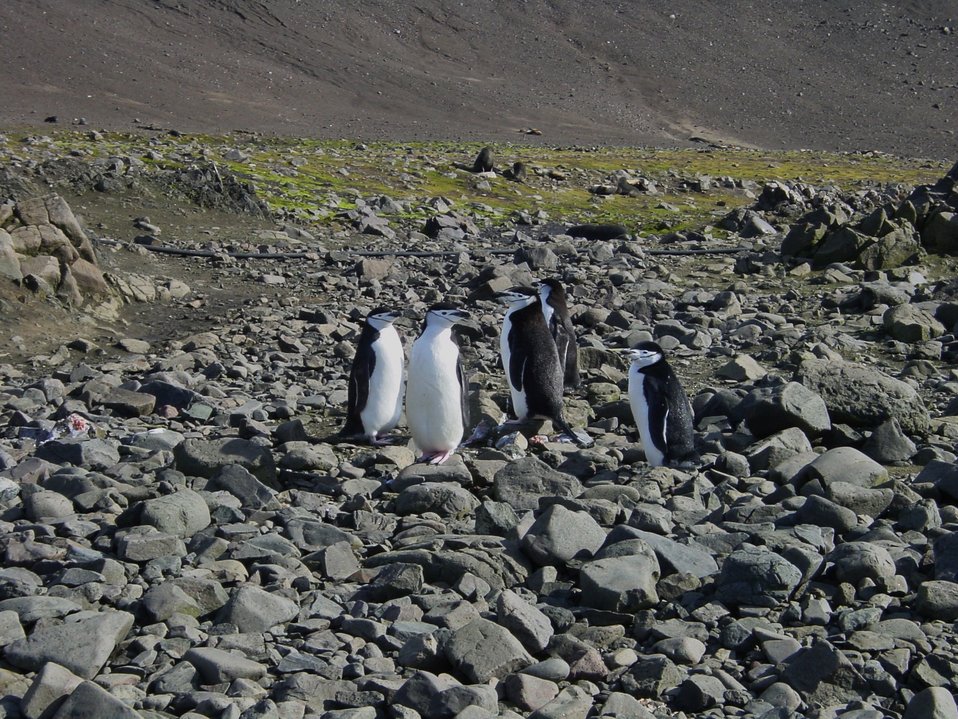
Chinstrap penguins